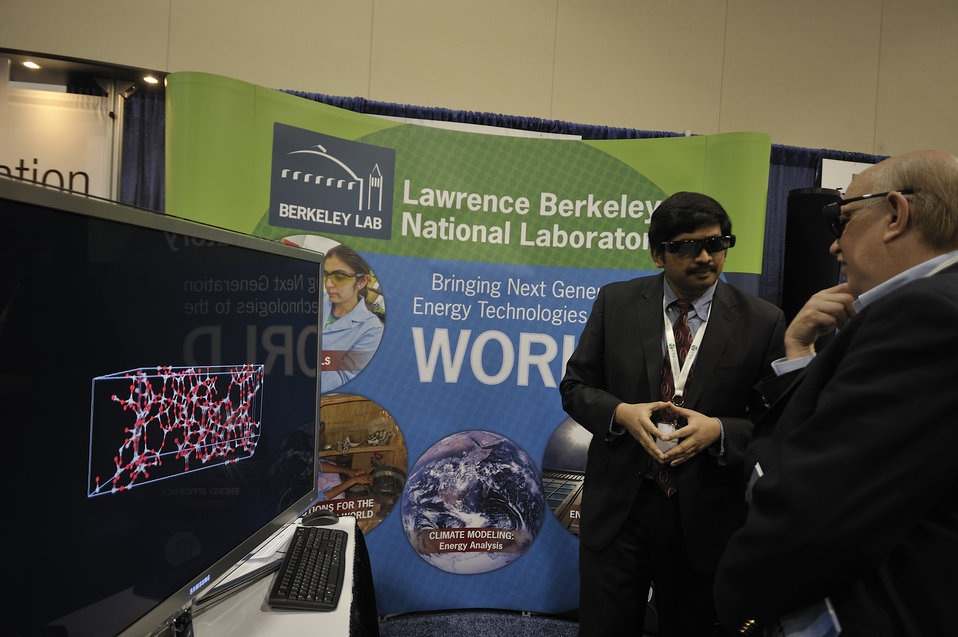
ARPA-E Energy Innovation Summit 2011, 42 of 83

Lawrence Berkley National Laboratory's booth at the Summit's Technology Showcase.